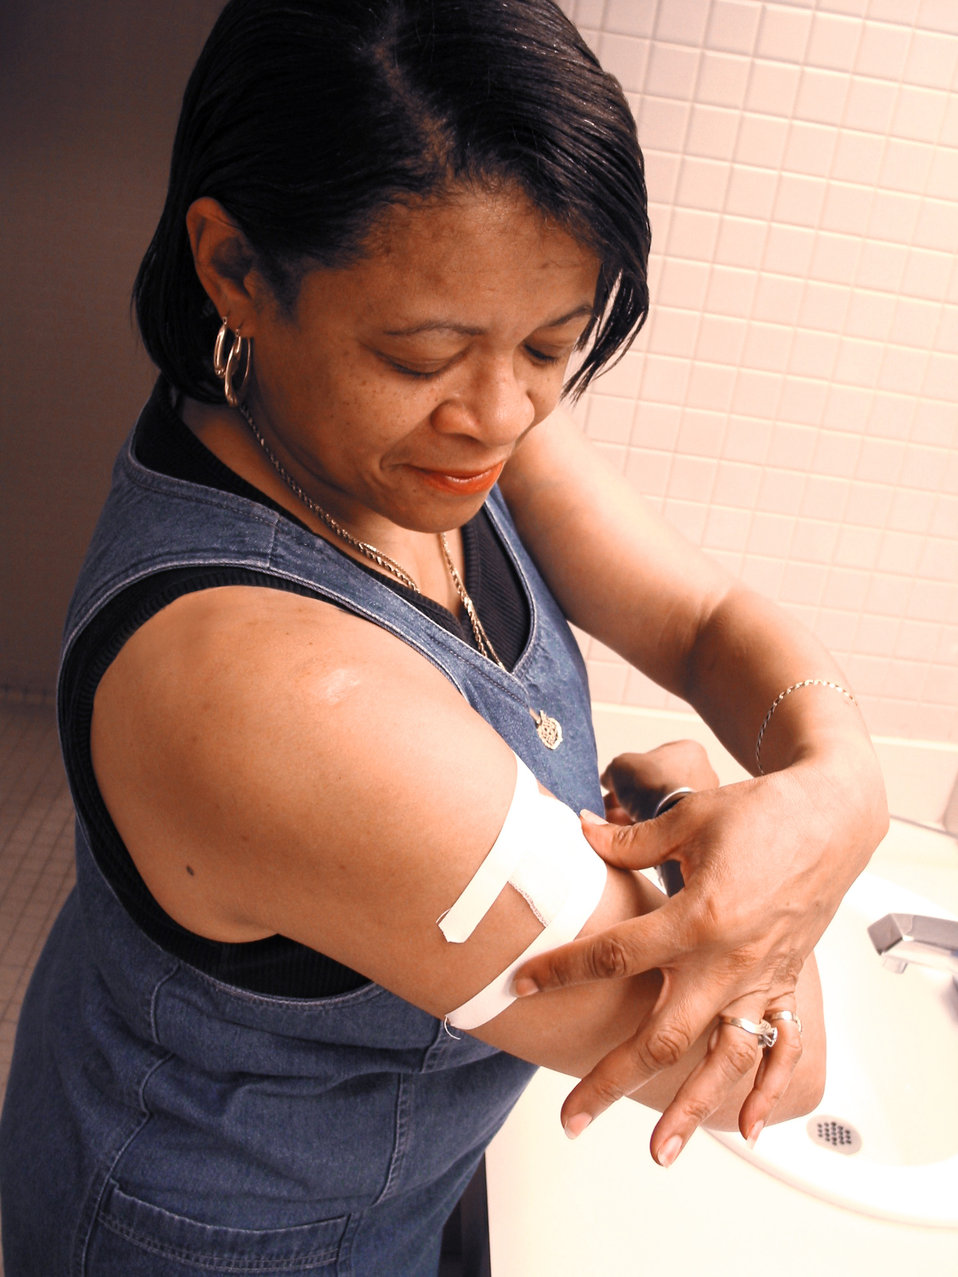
This demonstrates how a smallpox vaccinee correctly applies a gauze bandage to cover her vaccination site.